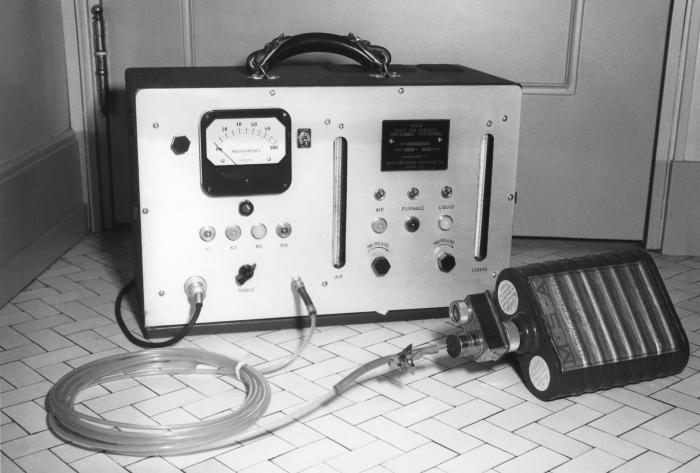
This 1949 historical photograph was provided by the Center for Disease Control's (CDC), National Institute for Occupational Safety and Health (NIOSH). Reprinted from the August, 1949, 'Industrial Hygiene Newsletter', it depicted a Mine Safety Appliances Company (MSA), Davis Micro Gas Analyzer�, a machine used to monitor indoor/outdoor air contamination.